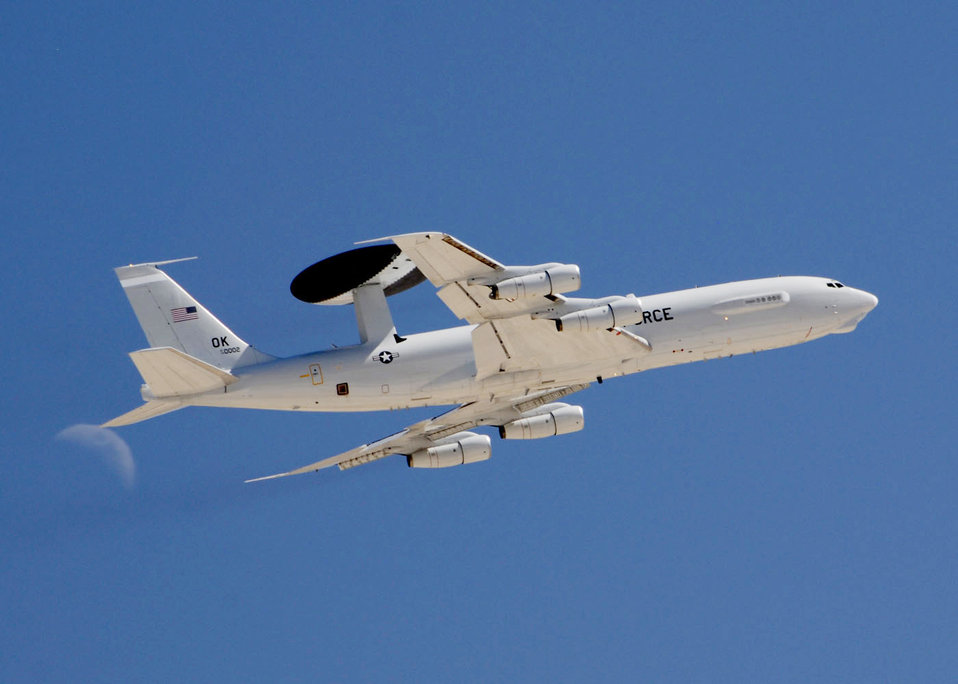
Ears in the Sky

Engineers with the Electronic Systems Center at Hanscom Air Force Base, Mass., are working on a next-generation Identification Friend or Foe system for Airborne Warning and Control System aircraft. The system aims to allow for earlier identification of targets, minimizing the chance of fratricide.